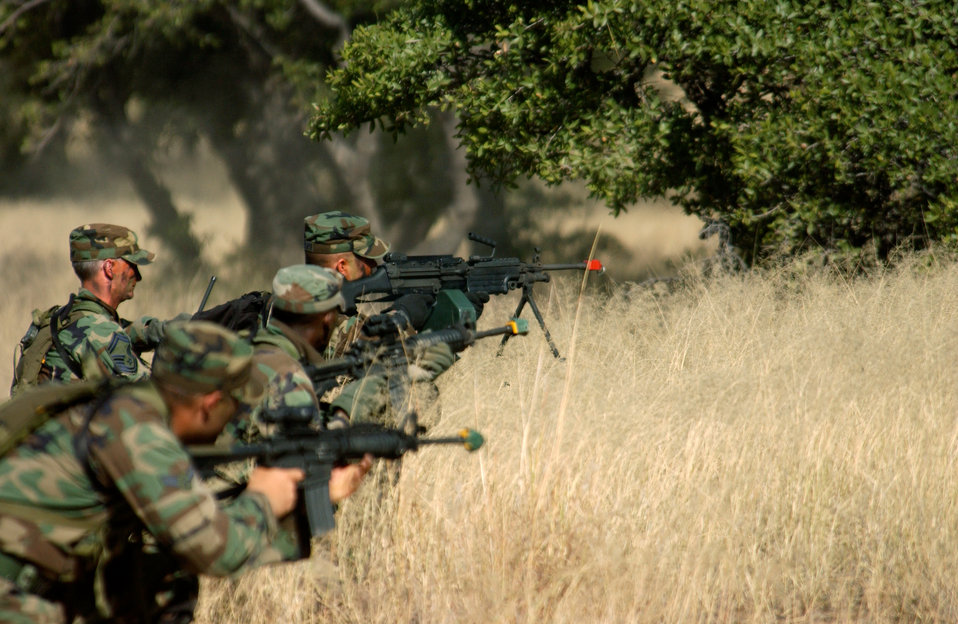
Defender Challenge 2004

FORT HUACHUCA, Ariz. - Members of the U.S. Air Forces in Europe Defender Challenge team set up a base of fire after contact with enemy forces during a tactics training exercise Oct. 13. The team is spending three weeks here in preparation for the 2004 Defender Challenge competition. Defender Challenge held at Lackland Air Force Base, Texas, is a security forces competition pitting competitors from major commands against one another over a series of events including marksmanship, tactics and physical fitness.